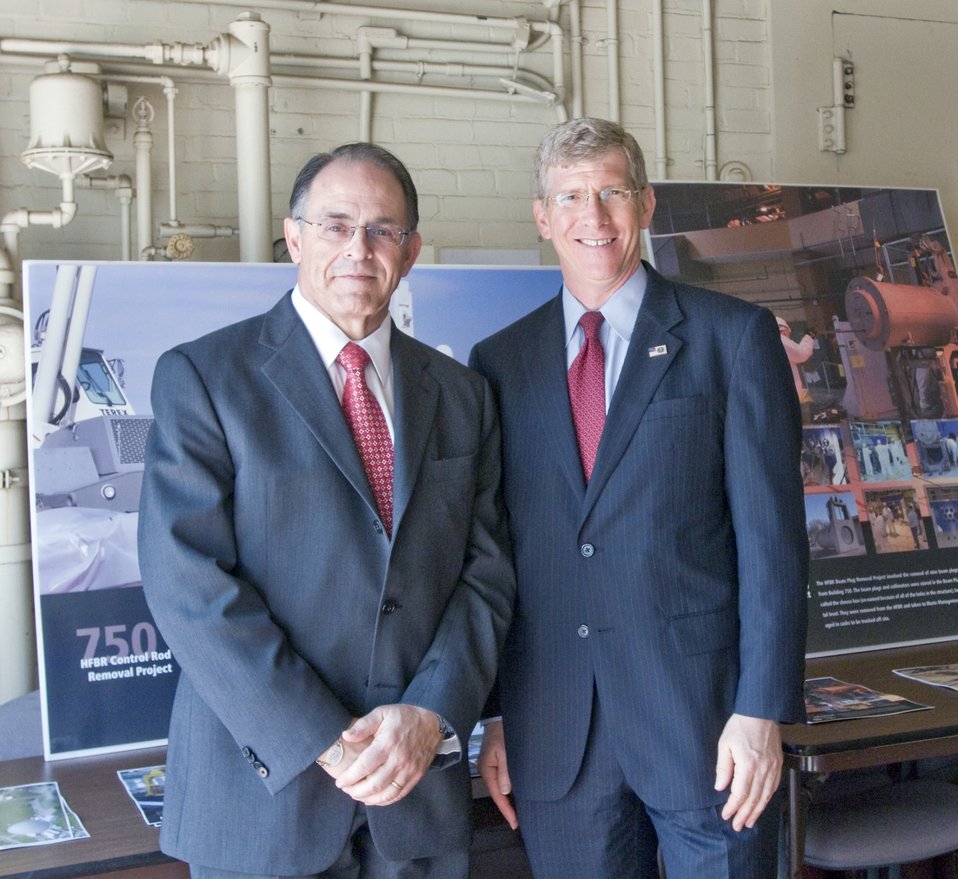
Brookhaven 4

Deputy secretary of doe.Daniel poneman